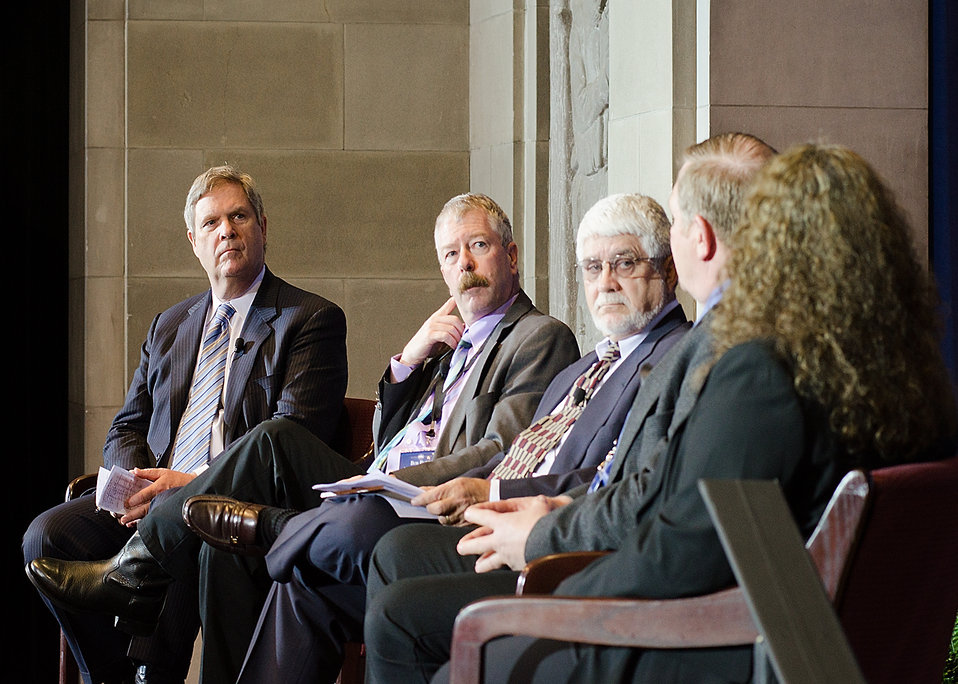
From left: Agriculture Secretary Tom Vilsack, Wyoming Wildlife and Natural Resources Trust (WY) –Sage Grouse conservation rancher Bob Budd, Longleaf Pine Alliance (AL) –Long Leaf Pine Conservation representative Rhett Johnson, from Daybreak Ranch in Hyde County South Dakota rancher Jim Faulstich, and Sustainable Northwest (OR) – Community-based forestry-Forest restoration representative Maia Enzer participated on the “Conserving Rural Lands: New Models for Working Lands and Wildlife” panel during a White House Conservation Conference, “Growing America’s Outdoor Heritage and Economy” at the Interior Department, Yates Auditorium in Washington, D.C. on Friday, March 2, 2012 The conference was part of President Barrack Obama’s, “America’s Great Outdoors Initiative” to spotlight community-driven conservation efforts and discussed how to build their success.